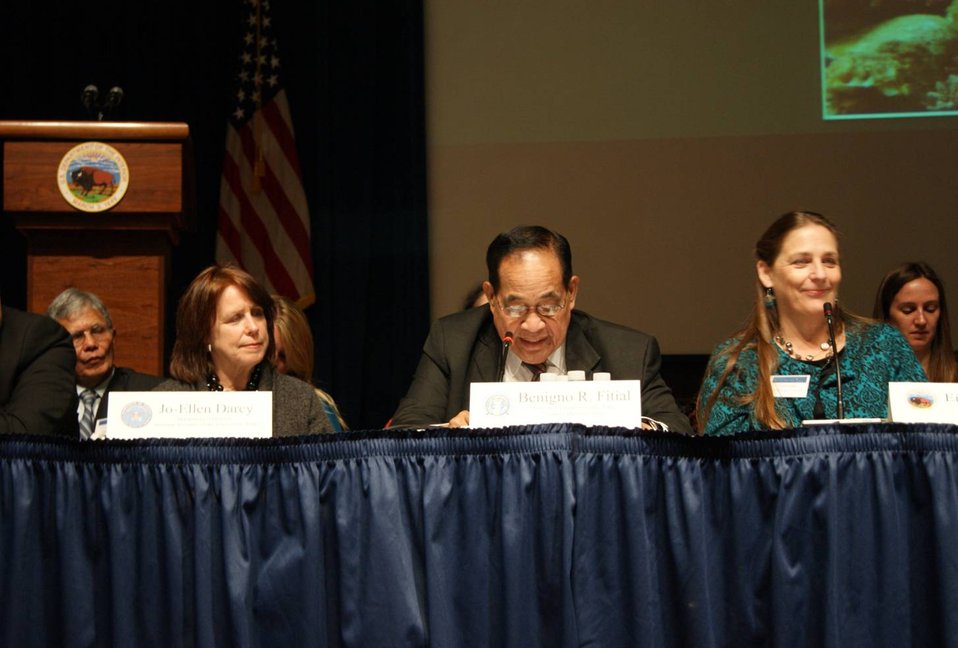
Coral Reef Task Force - Winter Meeting 2012